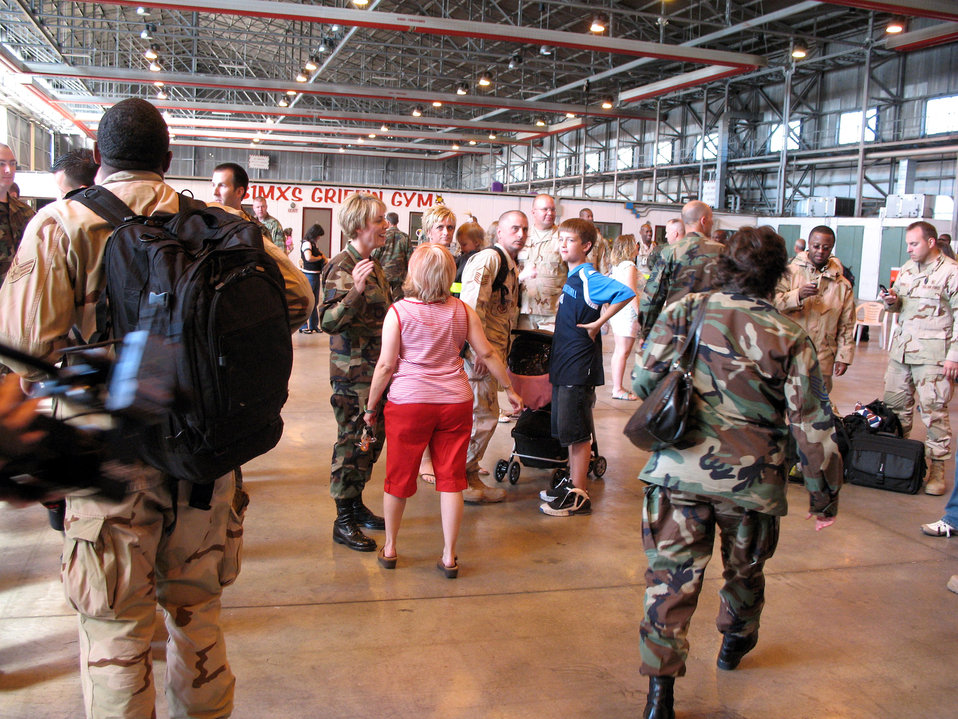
Aviano Airmen return home from fighting war on terrorism

Airmen from the 31st Fighter Wing return home to smiles and hugs from loved ones after a four-month deployment May 18 at Aviano Air Base, Italy. The Airmen were deployed in support of air expeditionary force 5 and 6 cycles downrange.